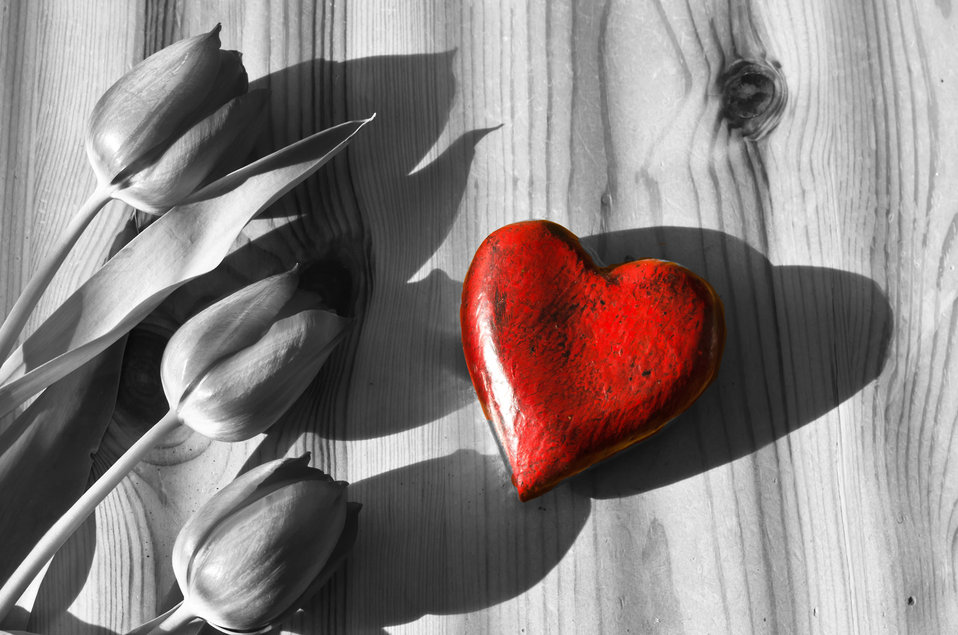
Red heart - postcard.